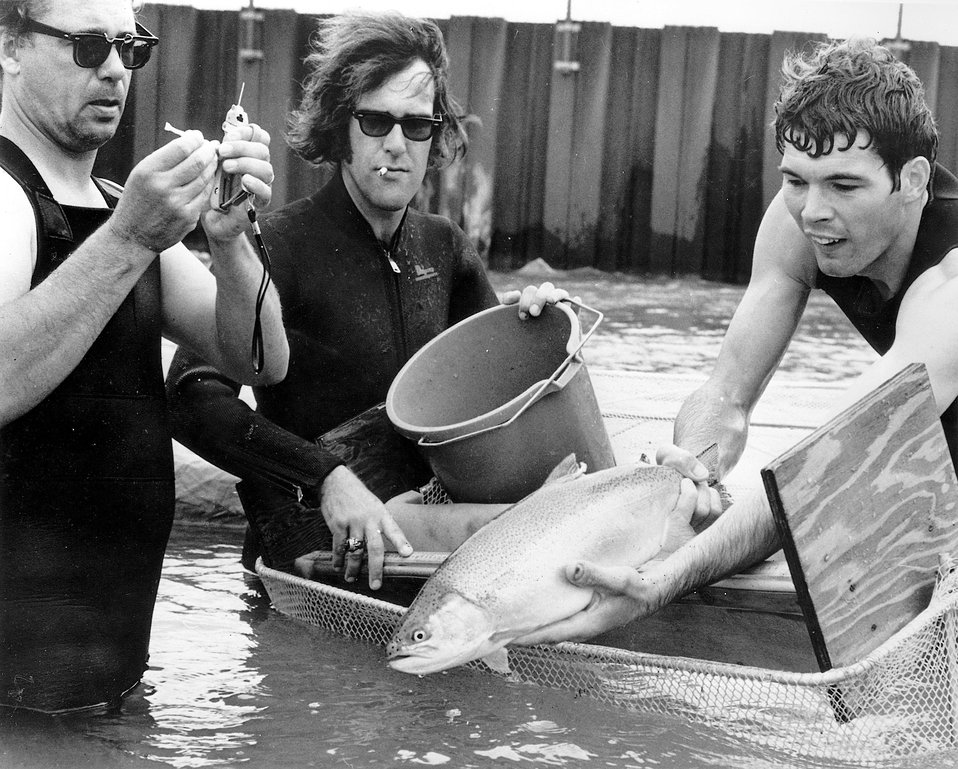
This rainbow trout is returned to its natural environment sporting one of the brightly colored tags attached by members of Argonne.
c.1973